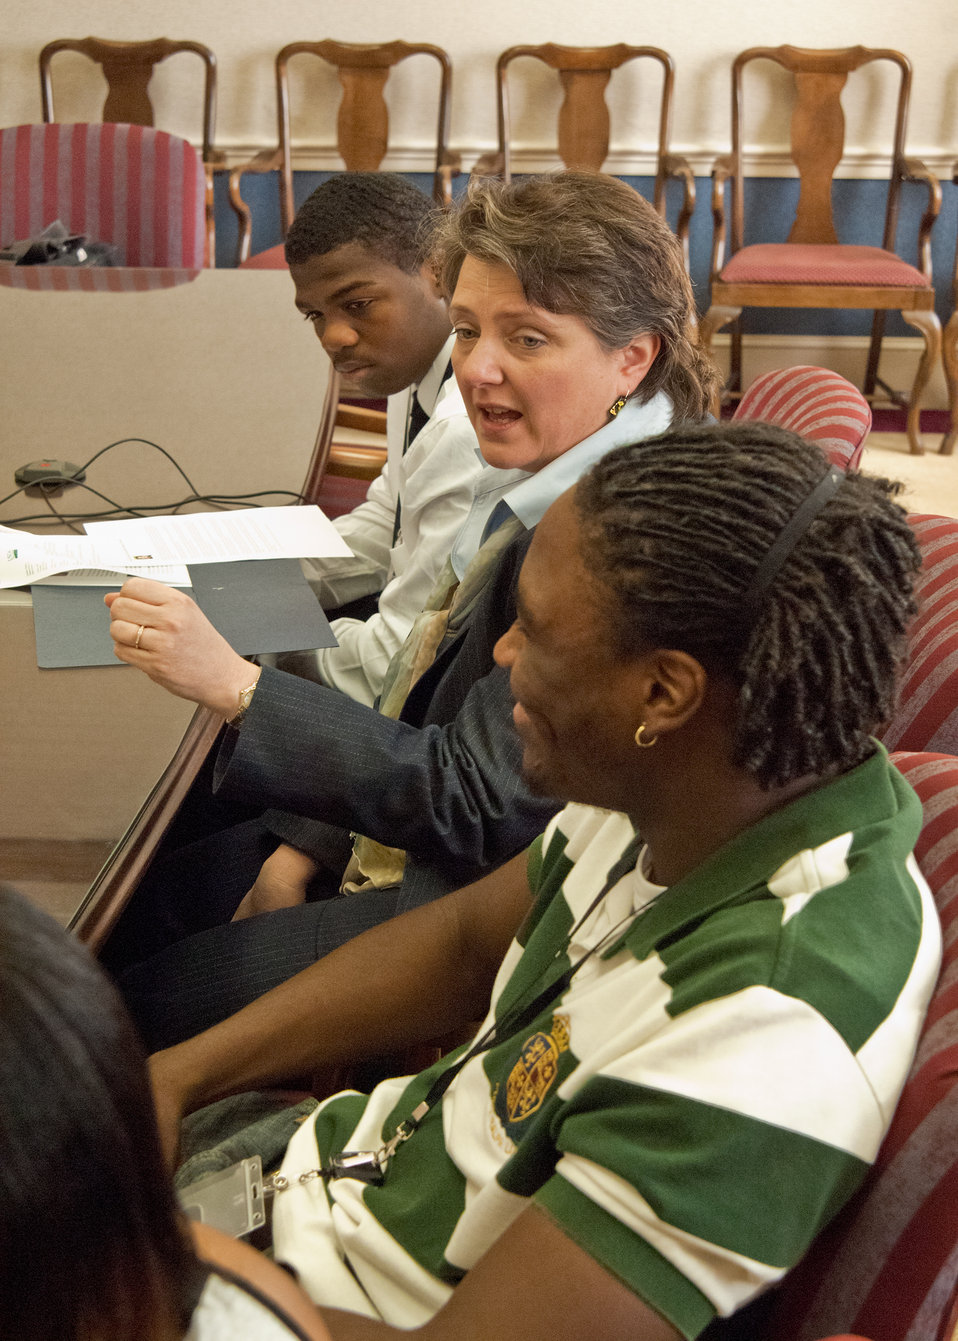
While on a Career Opportunity, seniors from Calvert High School Calvert, Texas tour the television studio United States Department of Agriculture (USDA) as part of a senior trip sponsored by the Farm Service Agency “Ag in the Classroom” program Monday, May 23, 2011, in Washington, DC. Seniors from Calvert High School Calvert, Texas Jamarion Ramirez (left), Agriculture Deputy Secretary Kathleen Merrigan (center), and Andre Ross (right) discuss career opportunities with their senior classmates.